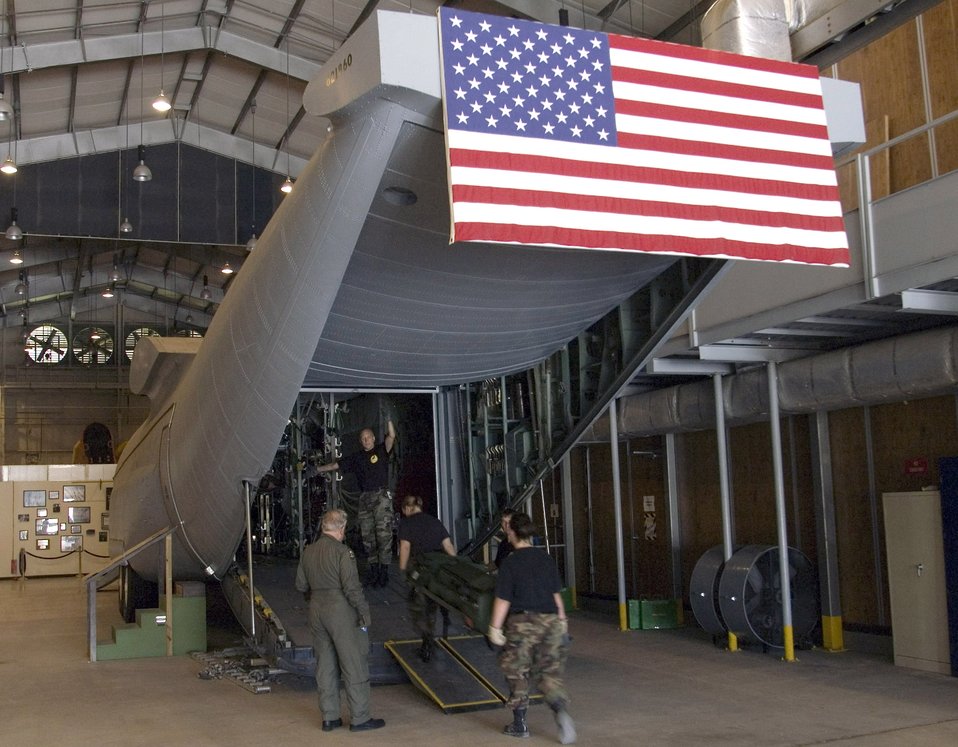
Flight surgeons get critical care hands-on in Hercules

Students load